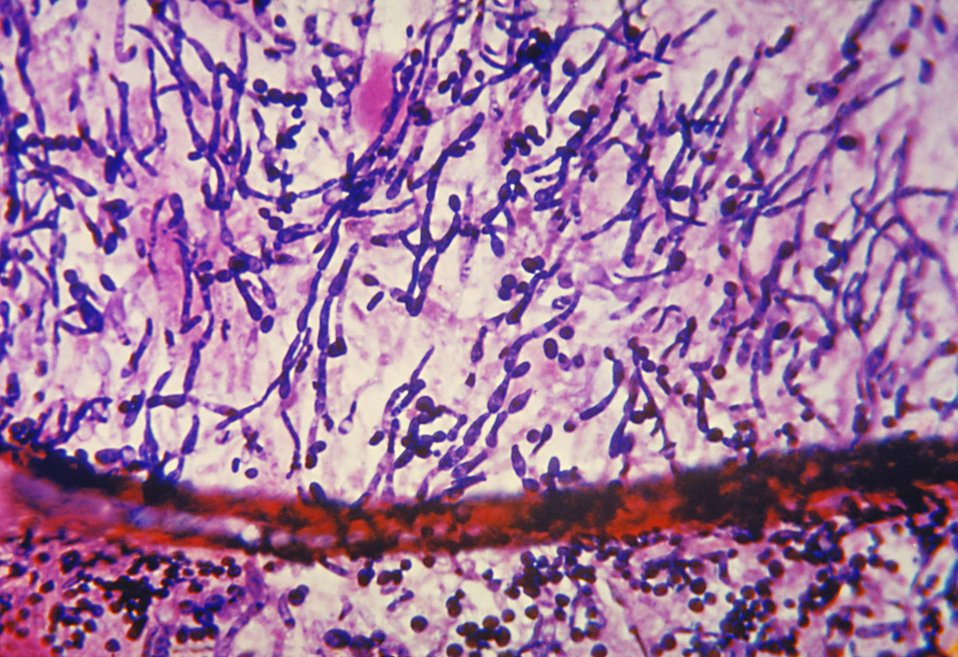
This photomicrograph reveals histopathologic changes indicative of endocarditis caused by the fungus Candida albicans.